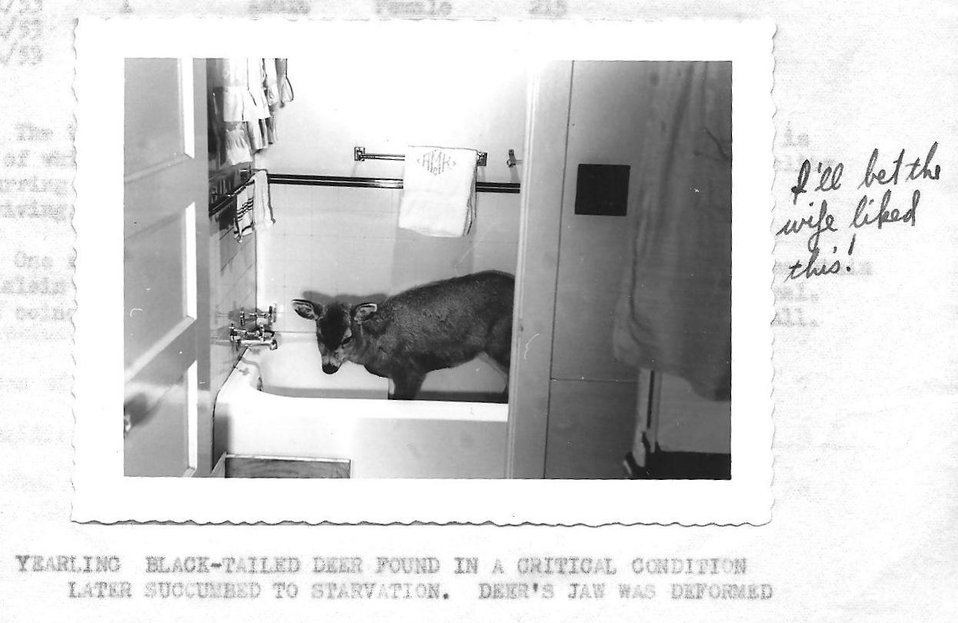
(1953) I'll Bet the Wife Liked This!

Credit: USFWS

Source and Contact: Kodiak National Wildlife Refuge